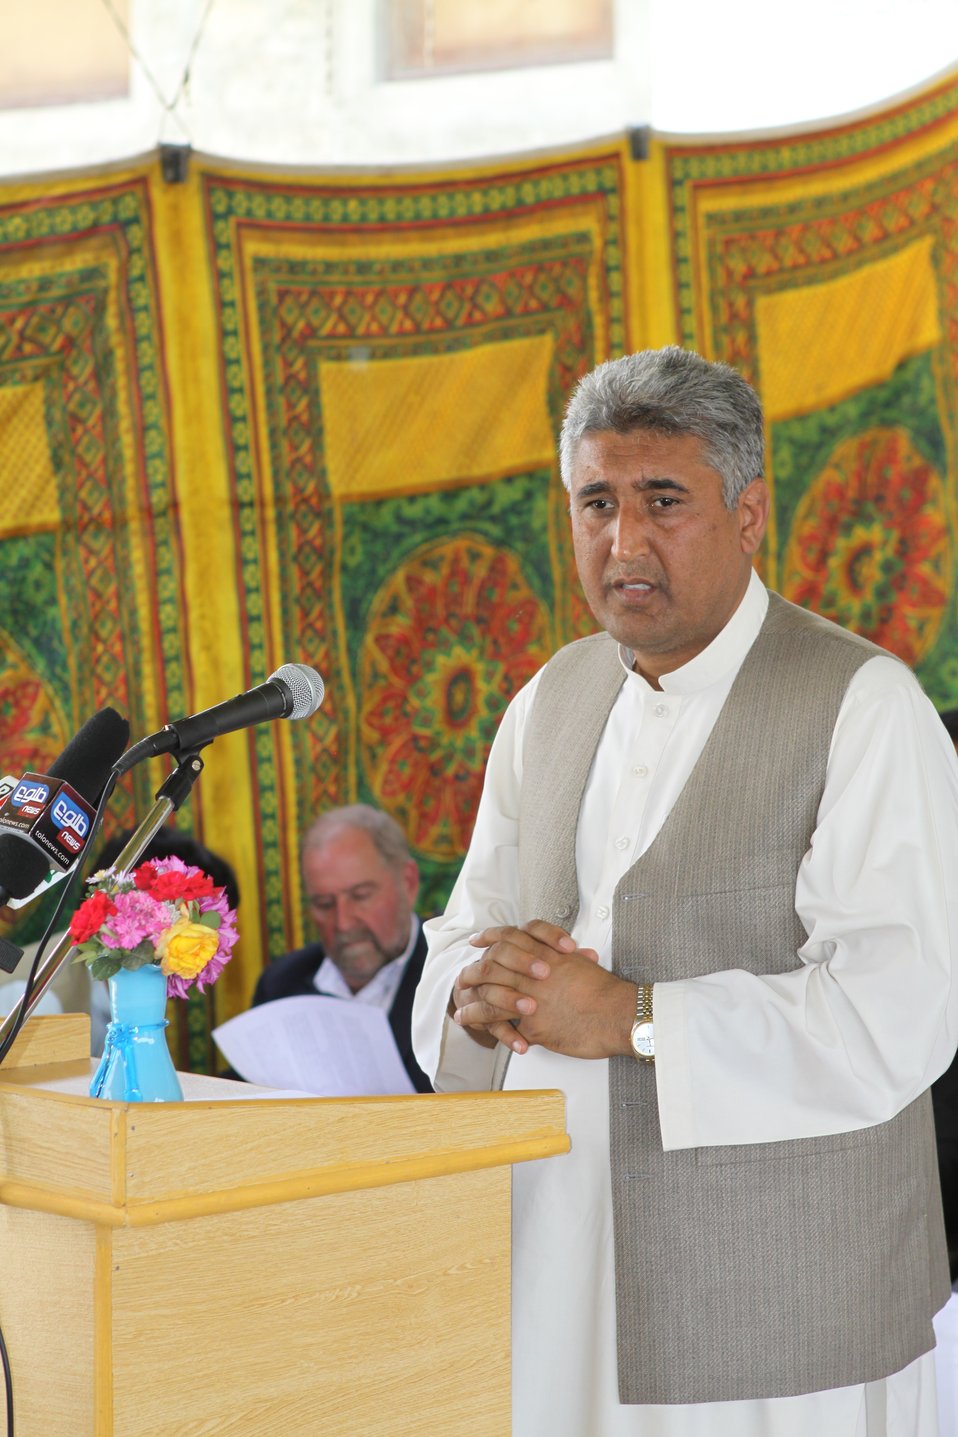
Bolan Poultry Farm